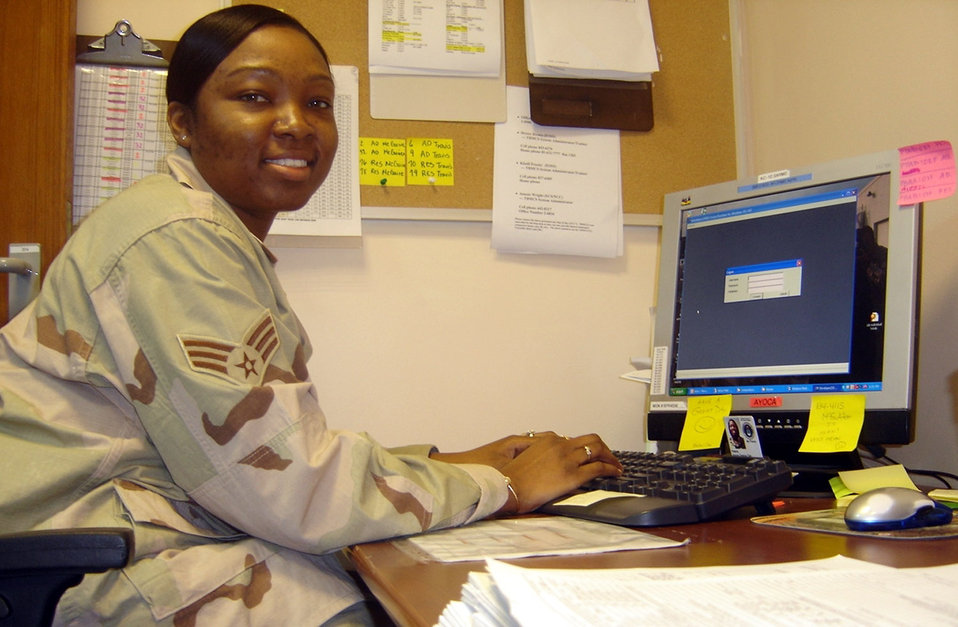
Serving through the season: Senior Airman Ayoca Peters

Senior Airman Ayoca Peters is an aviation resource management journeyman with the 32nd Air Refueling Squadron at McGuire Air Force Base, N.J.